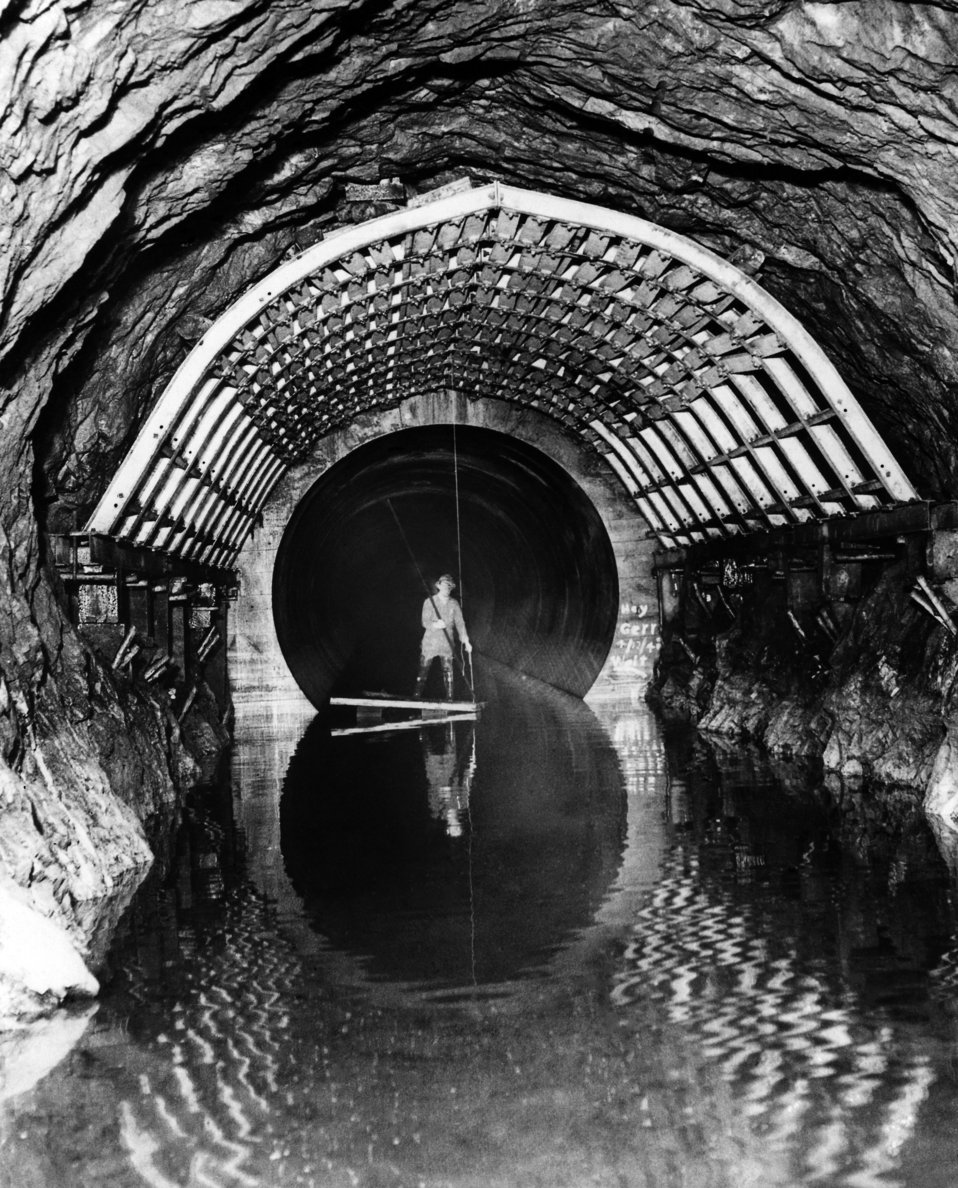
This historic image was provided by the Center for Disease Control's (CDC), National Institute for Occupational Safety and Health (NIOSH). The photograph depicted a tunnel worker who was standing inside an aqueduct under construction, on a wooden platform atop the water's surface, contained in the man-made structure. At this location, the tunnel was in three stages of completion. Arranged in an arch at the rooftop, was a meshwork of steel support beams hugging the vaulted ceiling; the raw rock having been exposed upon excavation, lined the foreground walls; in the background, the tunnel's interior was lined with concrete forming its smooth luminal surface. It's difficult to tell from this image what protective gear the worker was wearing, but it can be determined that he was wearing thigh-high boots, and what appears to be headgear, which hopefully was a helmet. This image was published in the January, 1948 edition of the 'Industrial Bulletin, N.Y.', p. 17.